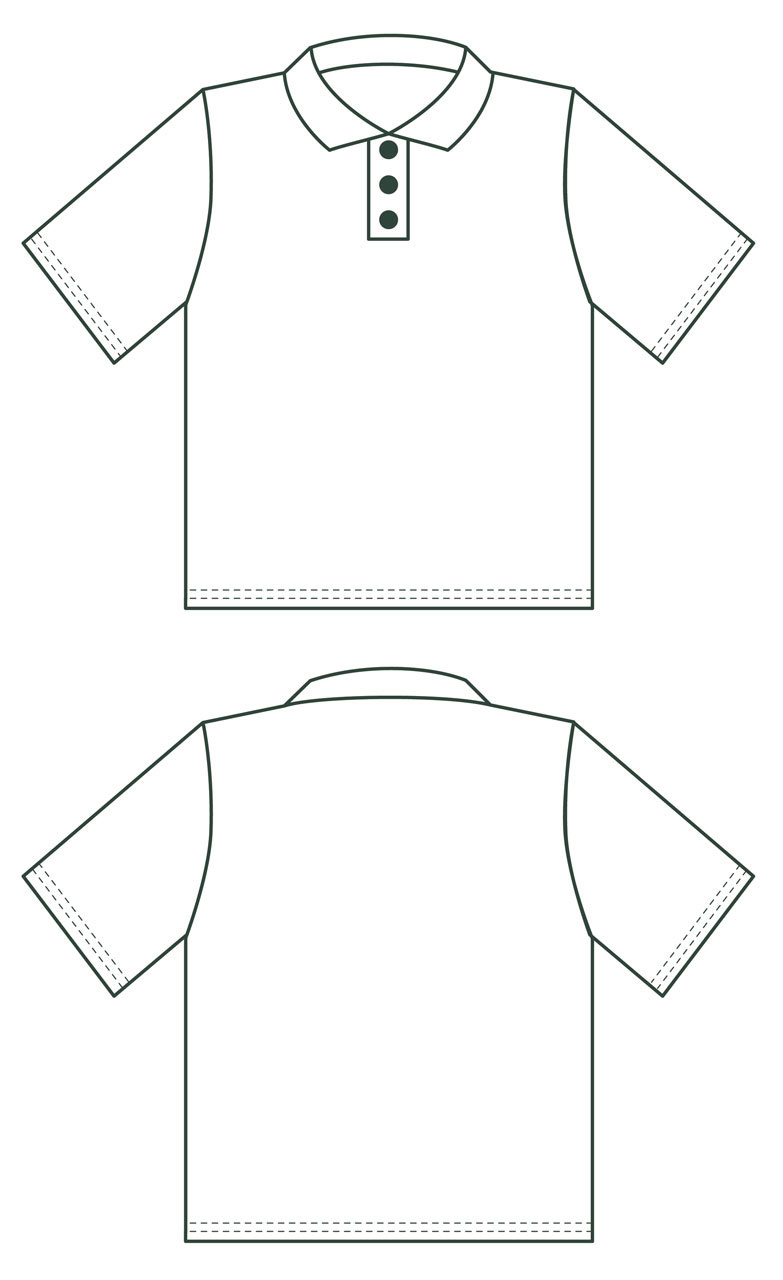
Polo shirt image

Polo top image that can be easily altered.